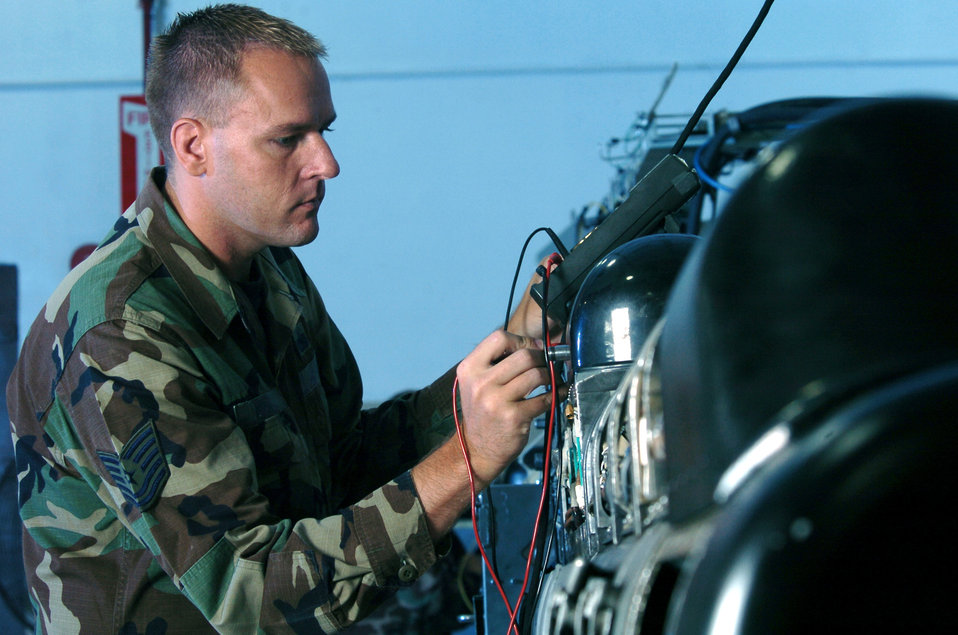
Protecting fighters

KUNSAN AIR BASE, South Korea -- Tech. Sgt. Brad Mikula uses a meter to check wires on the circuit card of an electronic countermeasures pod here. The ECM technicians maintain the F-16 Fighting Falcons pods used to defeat sophisticated anti-aircraft defense systems. Sergeant Mikula is assigned to the 8th Maintenance Squadron.